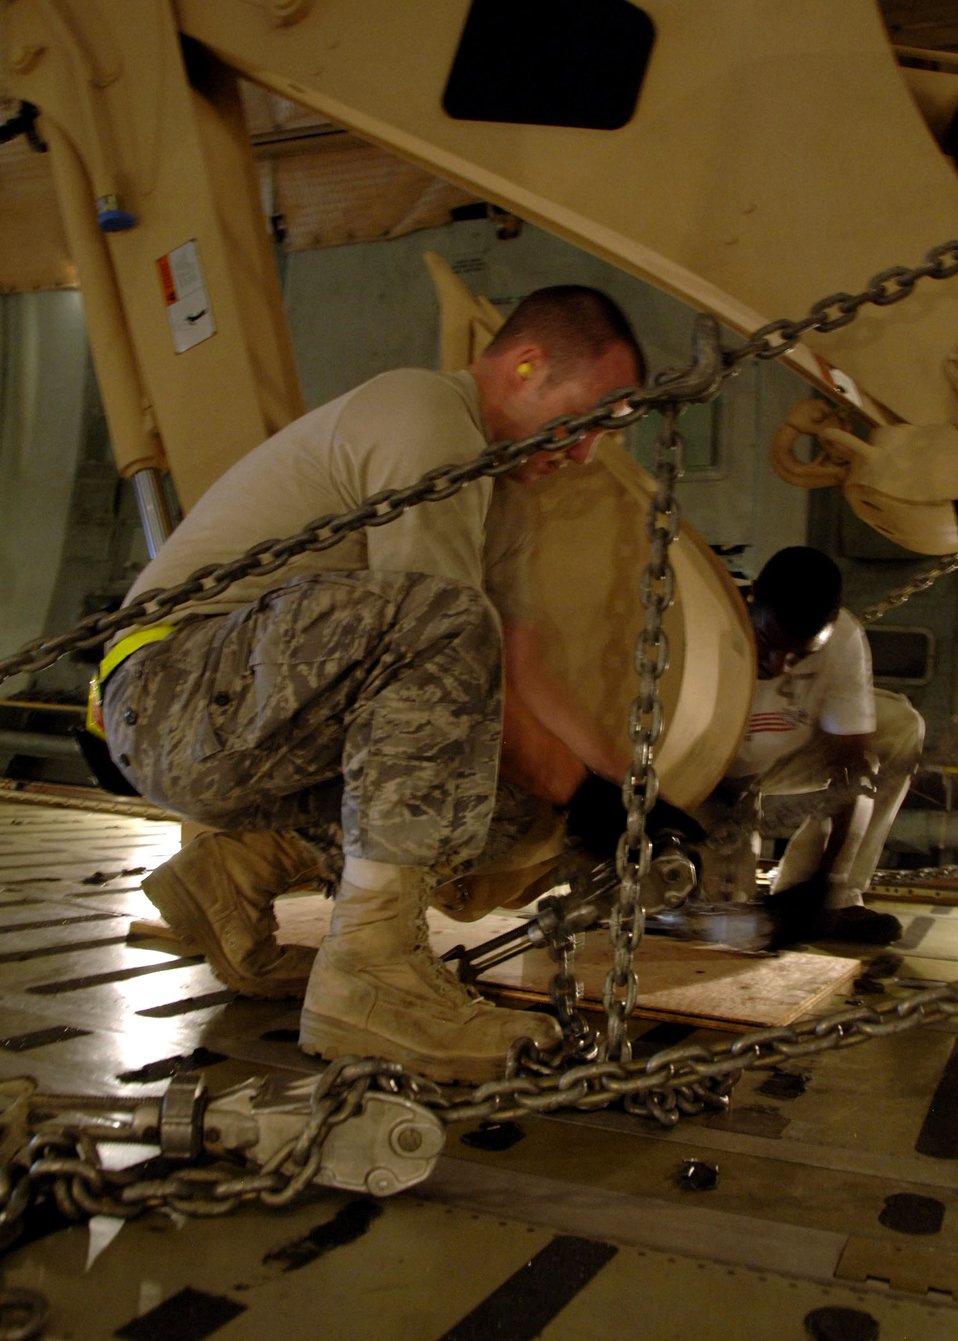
Charleston Airmen begin transporting new Army vehicles

Airman 1st Class Donald Barnec secures Army High Mobility Engineer Excavator to the floor of a C-5 Galaxy Sept. 29 at Charleston Air Force Base, S.C. Airman Barnec is an air transportation journeyman with the 437th Aerial Port Squadron. Air transportation journeymen are responsible for ensuring all cargo is secured properly for takeoff.